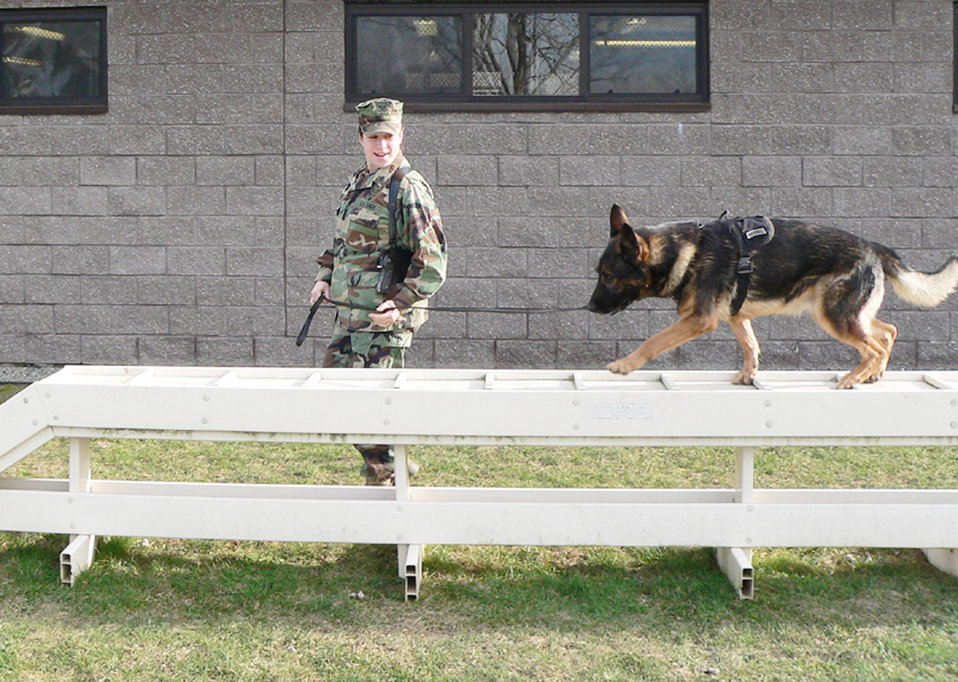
A dog's life at McGuire

Navy dog handler Petty Officer 2nd Class Ashley Bidon walks her military working dog across an obstacle course at the base kennel Jan. 5, 2010, at Joint Base McGuire-Dix-Lakehurst, N.J. The dogs are essential for detecting drugs and explosives, helping ensure the base is secure.